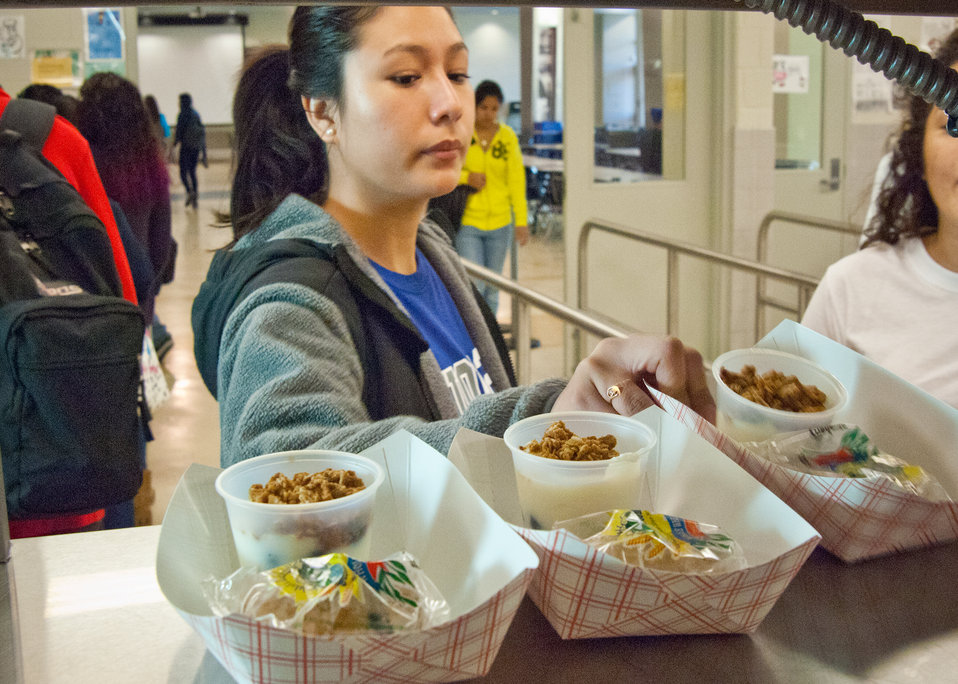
20111025-FNS-RBN-School Lunch

Students at Washington-Lee High School, in Arlington, VA, select a parfait of yogurt, fruit and granola along with a blueberry muffin for breakfast on Wednesday, October 25, 2011. The school breakfast and lunch are prepared by Arlington Public Schools, Food and Nutrition Services. The National School Lunch Program is a federally assisted meal program administered by the United States Department of Agriculture, Food and Nutrition Service operating in public, nonprofit private schools and residential child care institutions. It provides nutritionally balanced, low-cost or free lunches to children each school day.